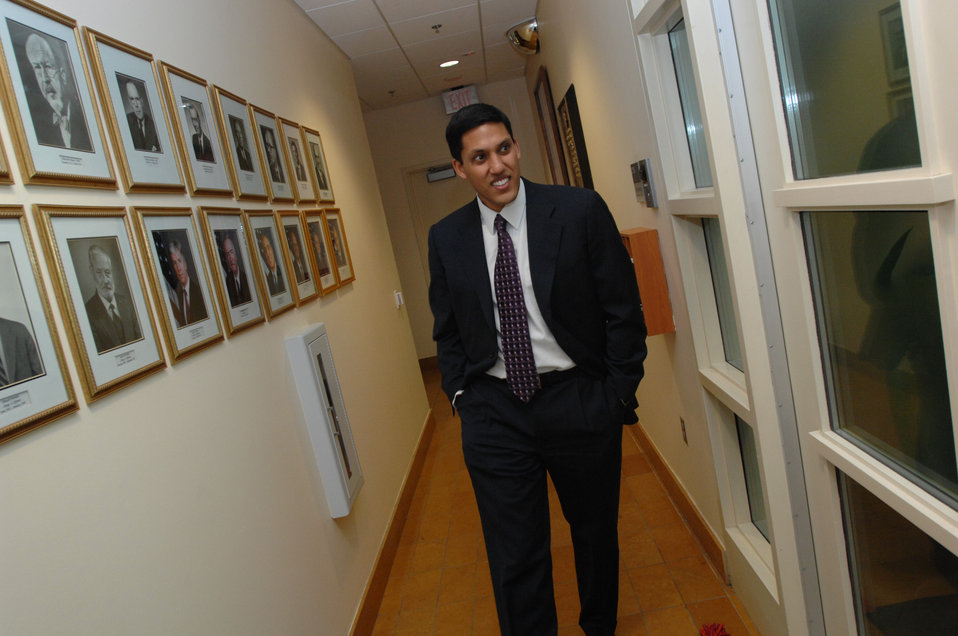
Shah

Dr. Rajiv Shah, Administrator of the United States Agency for International Development (USAID), looks at historical photographs before a meeting with U.S. Ambassador Karl W. Eikenberry and ISAF (International Security Assistance Force) Commander General David Petraeus at the U.S. Embassy in Kabul, Afghanistan on Tuesday, February 8, 2011. (S.K. Vemmer/Department of State)